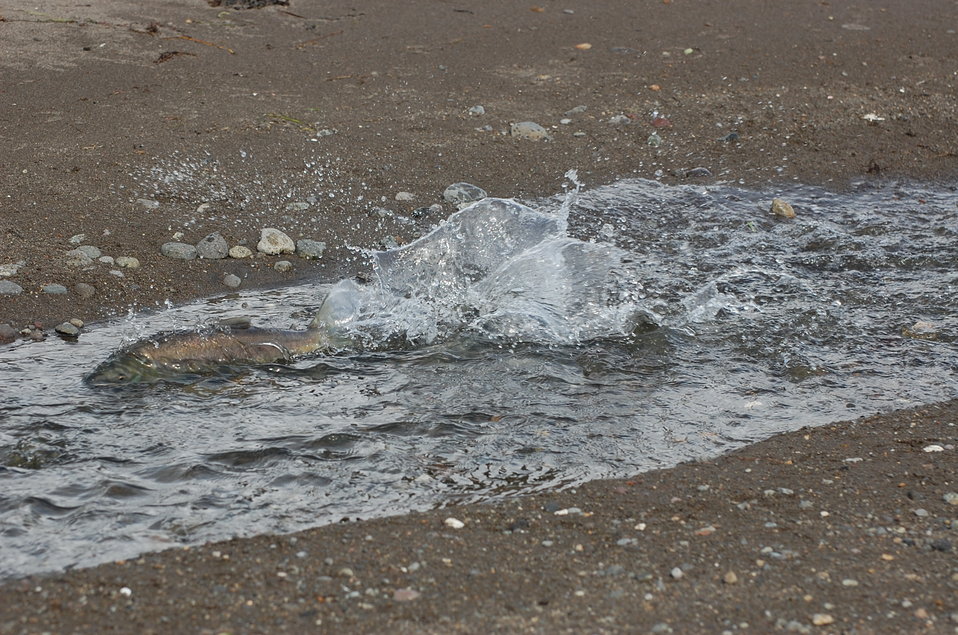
Pink Salmon at Cold Bay

Izembek National Wildlife Refuge